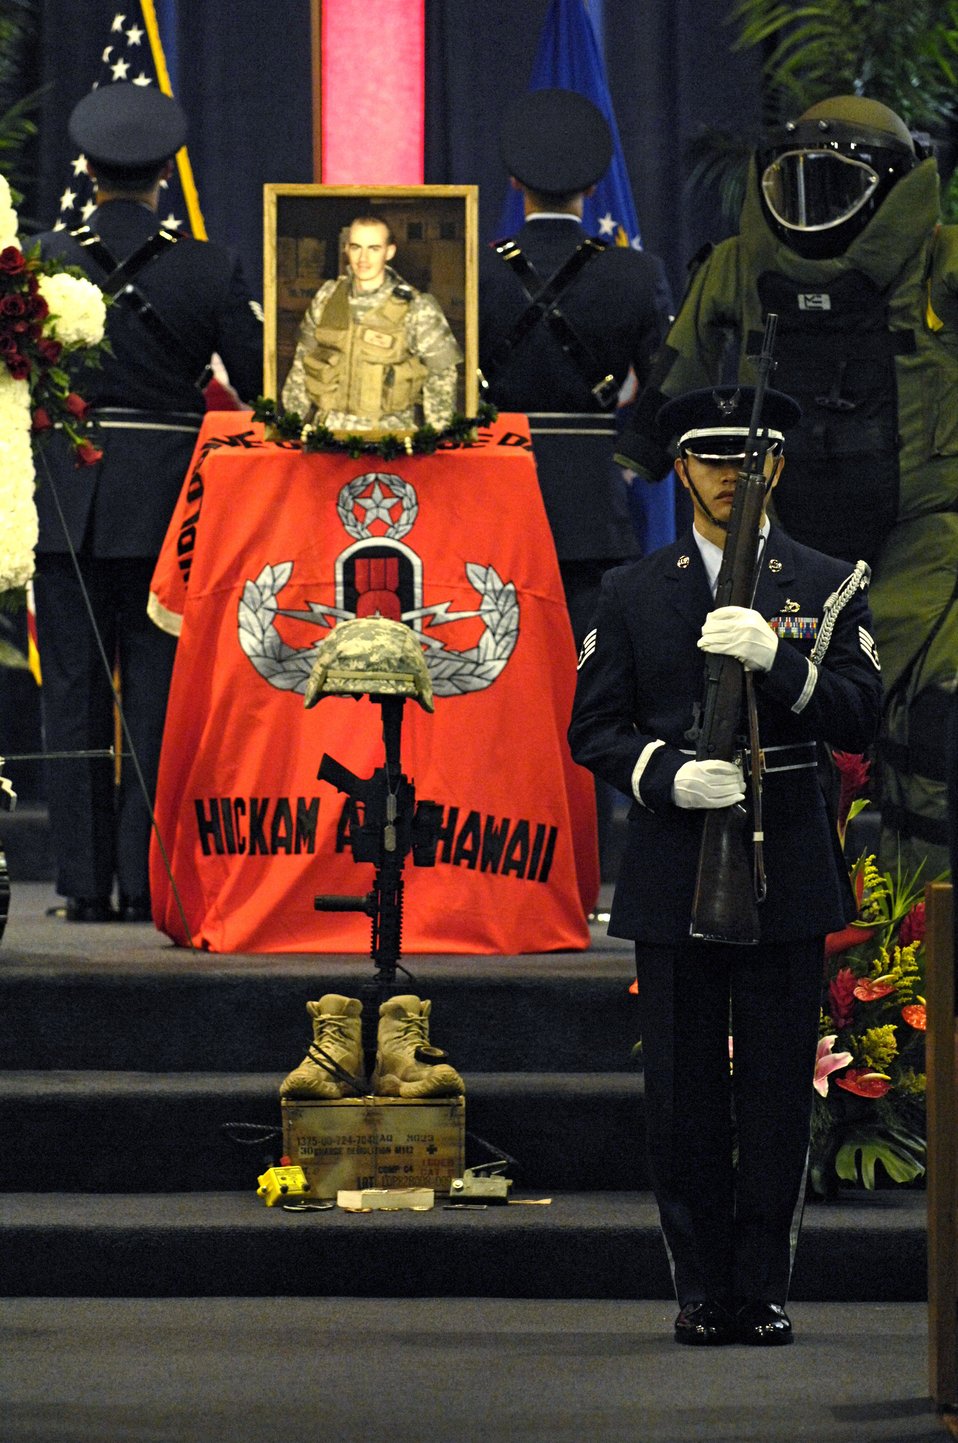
Solemn service

The Honor Guard posts the colors at a memorial service honoring Senior Airman William Newman at the base chapel June 13 at Hickam Air Force Base, Hawaii. Airman Newman, an explosive ordnance disposal technician assigned to the 15th Civil Engineer Squadron, was killed June 7 by an improvised explosive device, which detonated while he was supporting Army and Iraqi security forces near Mishna, Iraq.